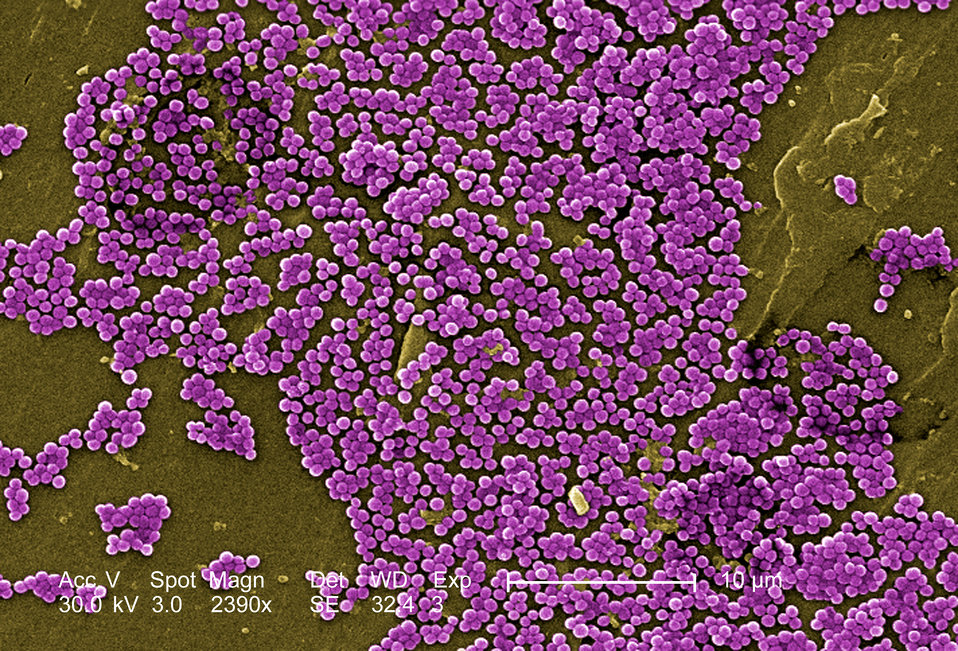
This colorized 2005 scanning electron micrograph (SEM) depicted numerous clumps of methicillin-resistant Staphylococcus aureus bacteria, commonly referred to by the acronym, MRSA; Magnified 2390x. Recently recognized outbreaks, or clusters of MRSA in community settings have been associated with strains that have some unique microbiologic and genetic properties, compared with the traditional hospital-based MRSA strains, which suggests some biologic properties, e.g., virulence factors like toxins, may allow the community strains to spread more easily, or cause more skin disease. A common strain named USA300-0114 has caused many such outbreaks in the United States. Please see PHIL 7822 for a black and white version of this image.